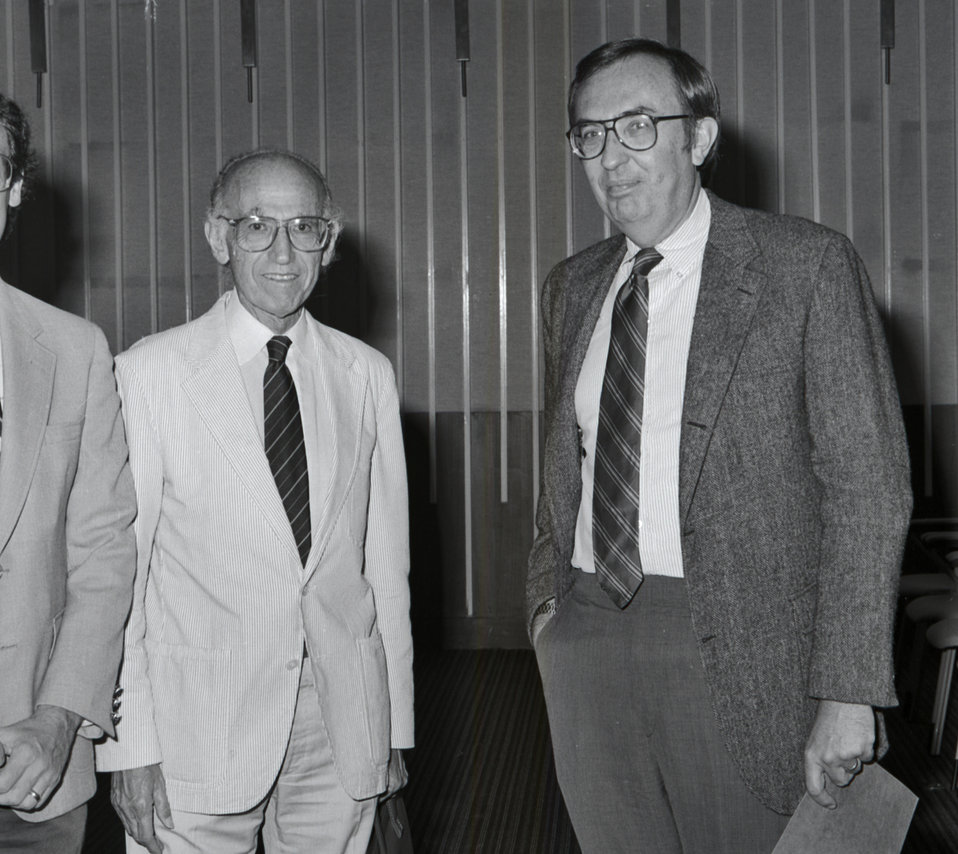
This 1988 photograph showed Dr. Jonas Salk (left), who introduced the first polio vaccine in 1955, and Dr. Frederick A. Murphy (right), former Director of the National Center for Infectious Diseases, together during Dr. Salk's visit to the Centers for Disease Control that year.